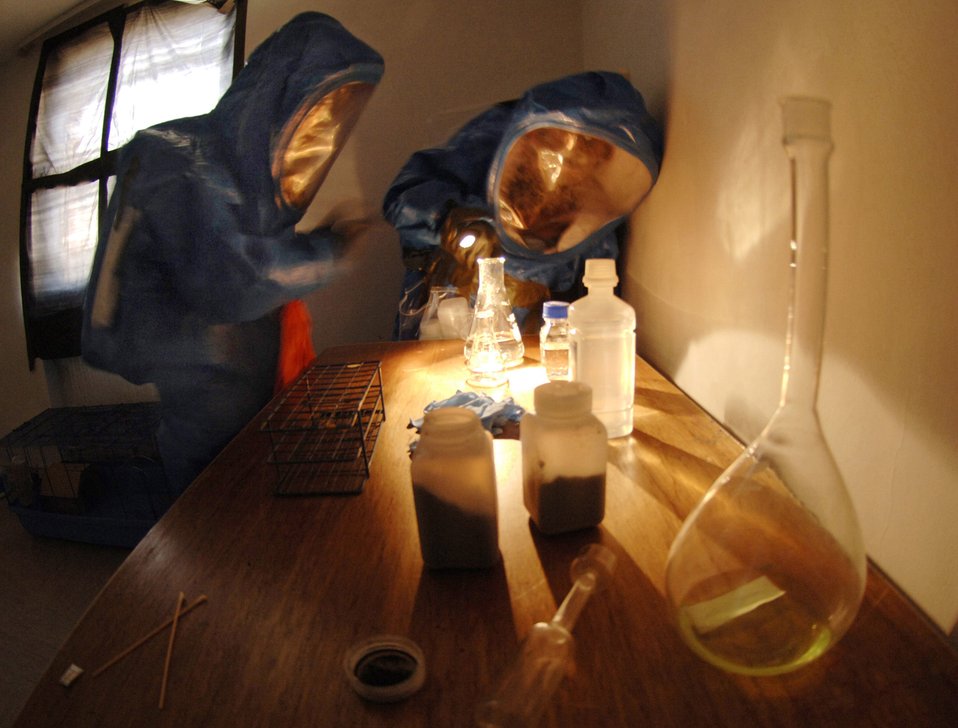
Time is of the essence

Tech. Sgt. Daniel MacDonald (left) and Airman 1st Class Jesse Ford race against the clock during a biological weapons exercise Aug. 1 at Sembach Air Base, Germany. Sergeant MacDonald is with the 435th Civil Engineering Squadron and Airman Ford is with the 435th Aerospace Medicine Squadron.